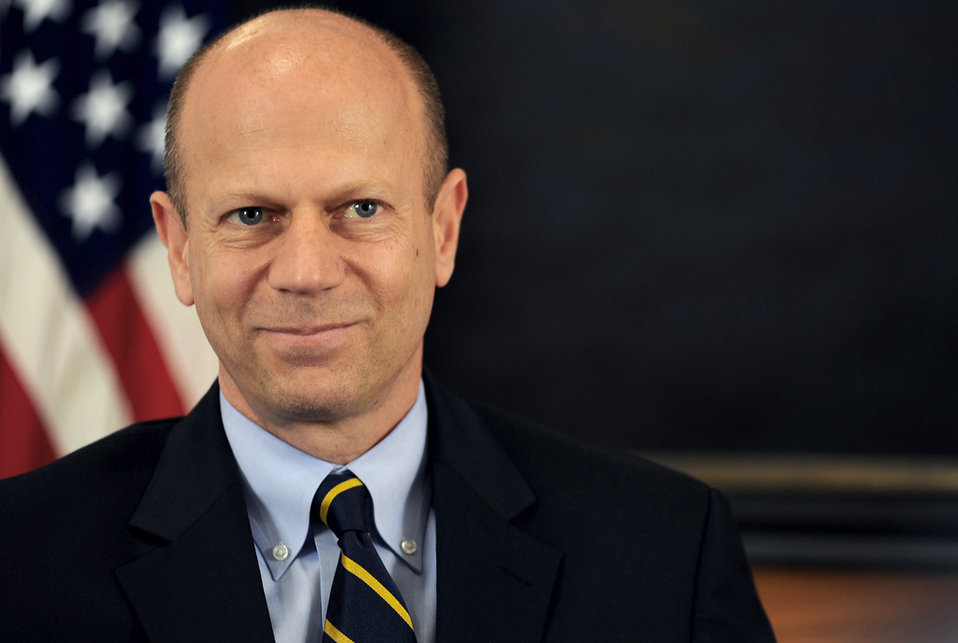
Assistant secretary of defense talks nuclear deterrence, treaties

Assistant Secretary of Defense for Nuclear, Biological and Chemical Defense Programs Andrew Weber visited Whiteman Air Force Base, Mo., May 9, 2011. During his visit, he met with Airmen, received a B-2 Spirit mission orientation and watched a portion of a security forces exercise.